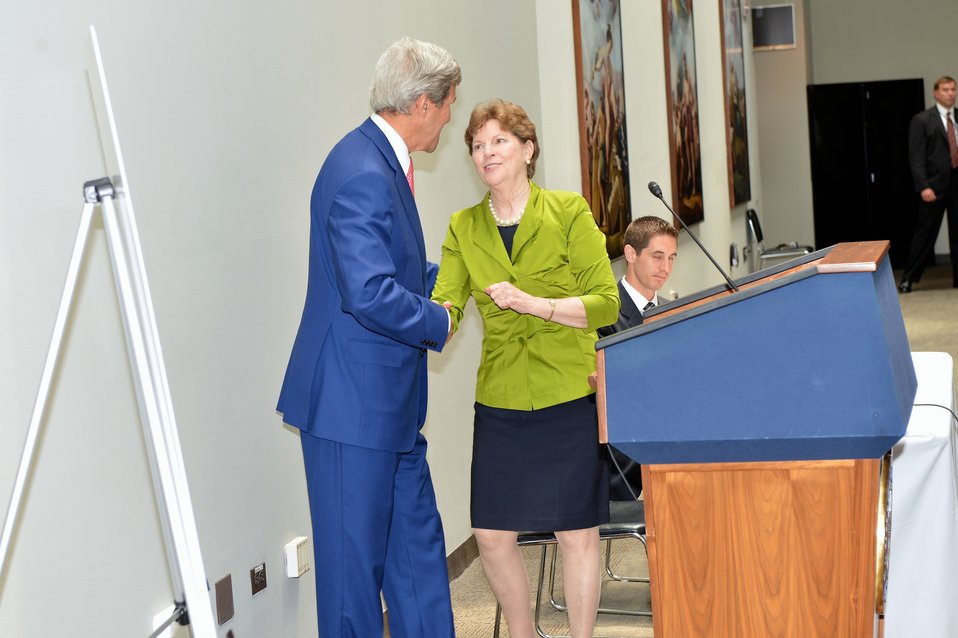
Senator Shaheen Thanks Secretary Kerry at the 4th Annual New Hampshire Business Day Luncheon

U.S. Senator Jeanne Shaheen thanks U.S. Secretary of State John Kerry for speaking at the 4th Annual New Hampshire Business Day Luncheon on Capitol Hill in Washington, D.C., on June 11, 2014.